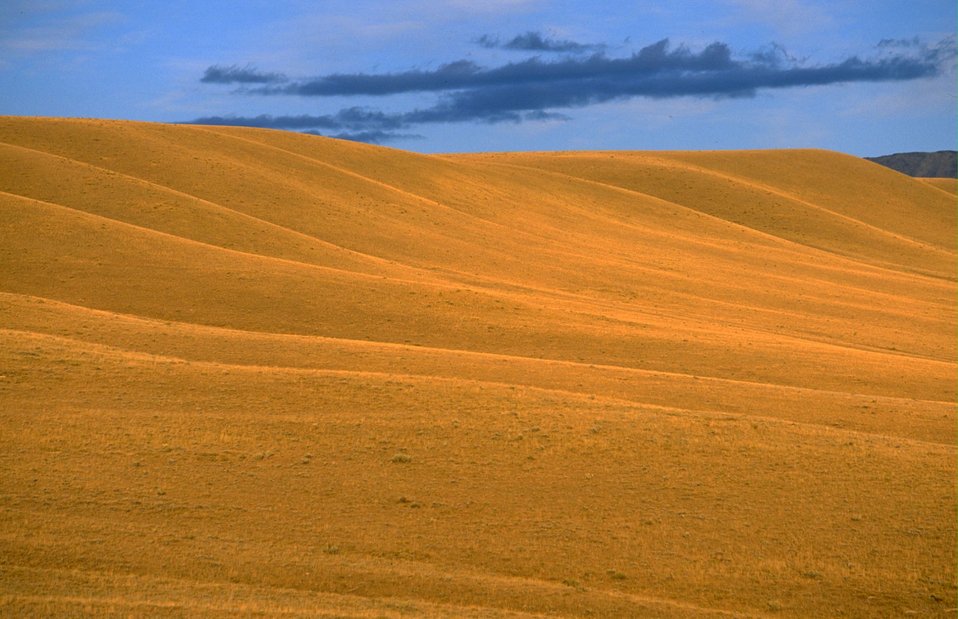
Beautiful golden grass in the evening light